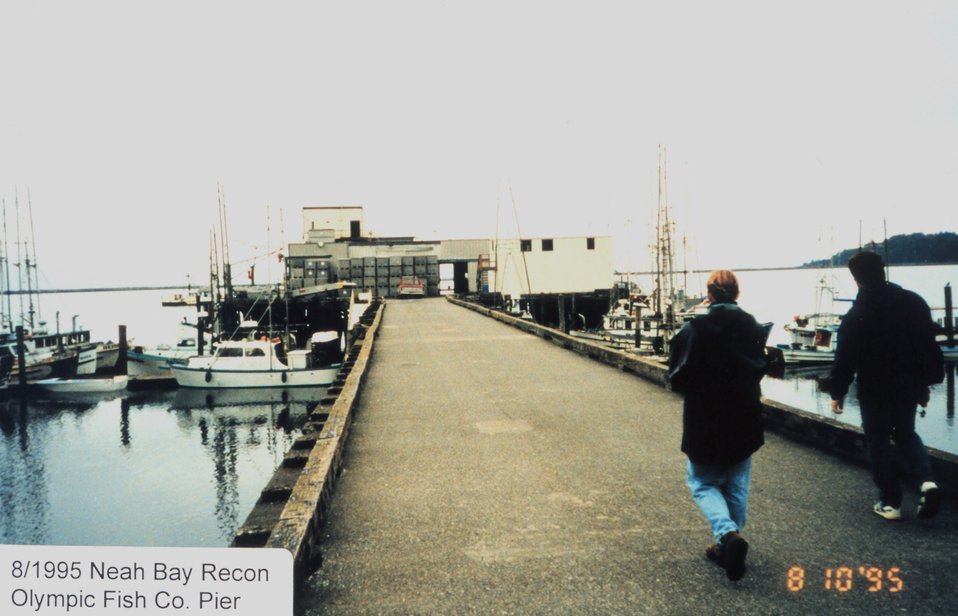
Performing reconnaissance for tide gage installation on the Olympic Fish Company